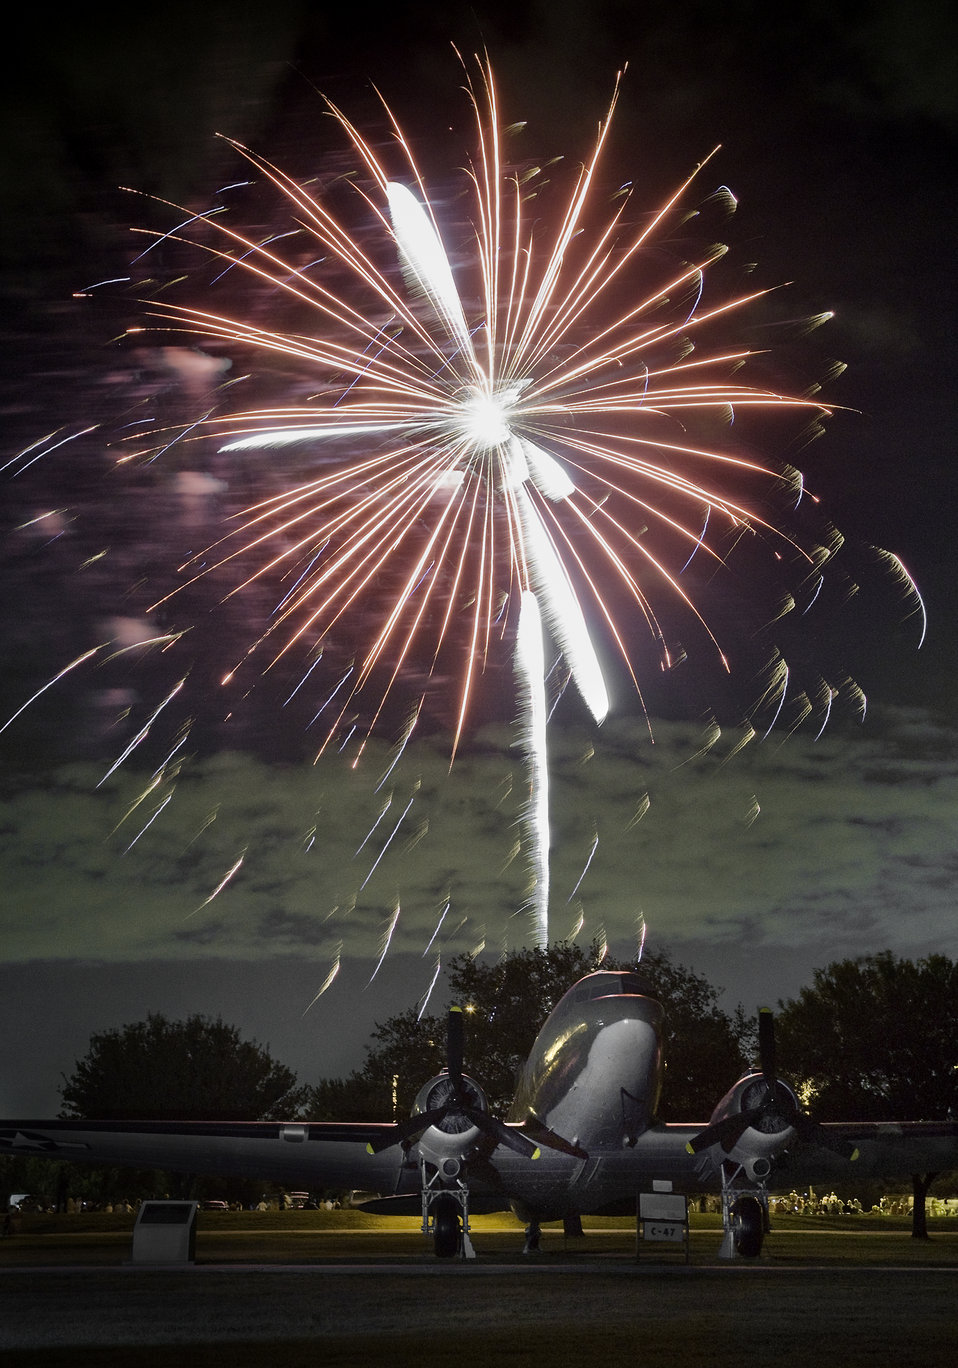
Evening Under the Stars

A C-47 cargo aircraft highlights the foreground during a fFourth of July fireworks display near the parade grounds of the 37th Training Wing at Lackland Air Force Base, Texas. The C-47 was one of the workhorses of the Berlin Airlift humanitarian mission shortly after the birth of of the U.S. Air Force in 1947.